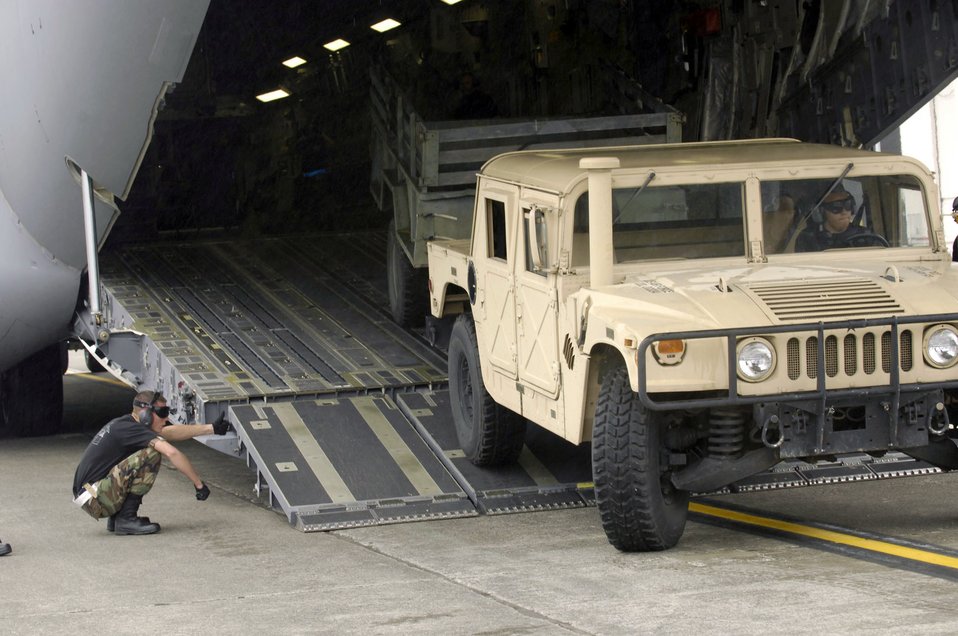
Transportation Airmen compete in Rodeo 2007

Airmen from the Air Force Reserve Command's 315th Airlft Wing at Charleston Air Force Base, S.C., load a C-17 Globemaster III during the aerial ports engine running on loads competition at Air Mobility Command's Rodeo 2007 July 20 at McChord Air Force Base, Wash. Rodeo 2007 is a readiness competition of U.S. and international mobility air forces. It focuses on improving warfighting capabilities in support of the war on terrorism.